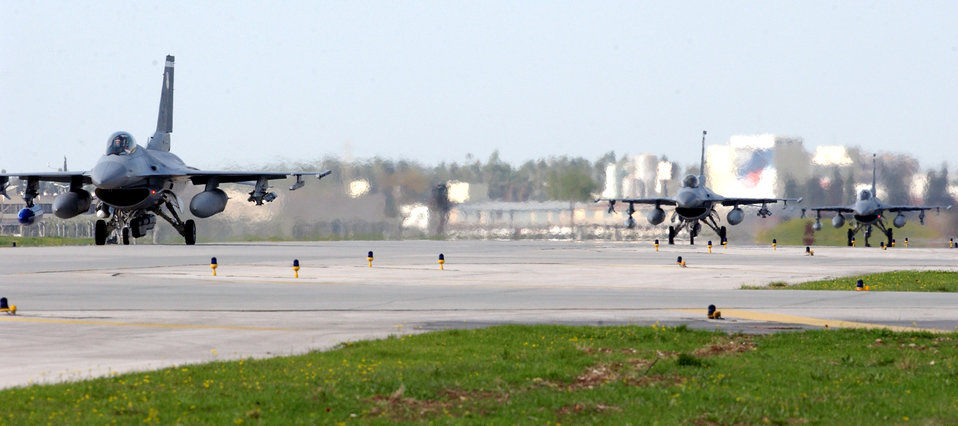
Mission complete

INCIRLIK AIR BASE, Turkey -- Two F-16CJ Fighting Falcons from the 55th Expeditionary Fighter Squadron taxi here for the last time April 7. The fighters are returning home to Shaw Air Force Base, S.C., after supporting Operation Northern Watch for several years. Aircraft flew their last ONW mission March 17.